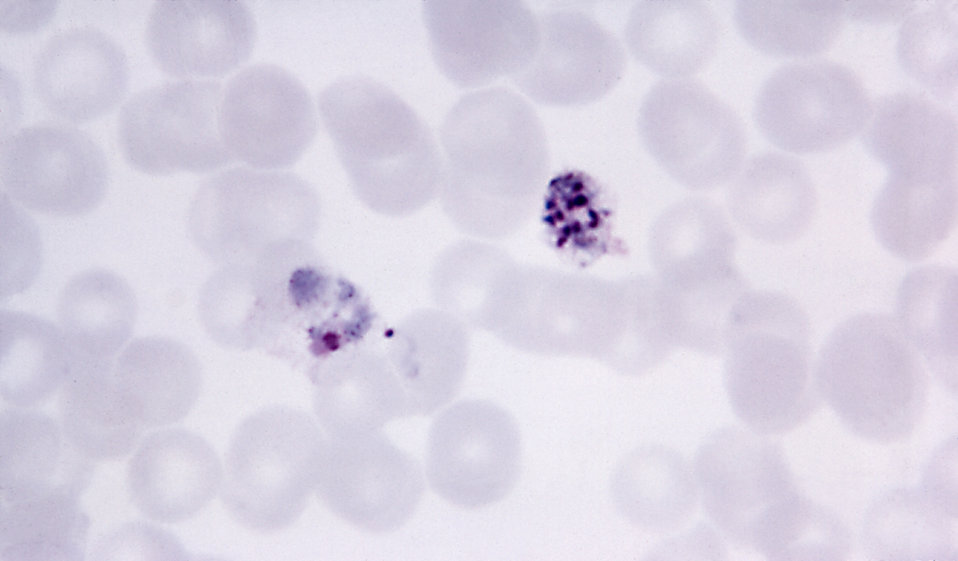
This thin film micrograph depicts an immature Plasmodium vivax schizont, and an old trophozoite; Mag. 1125X.